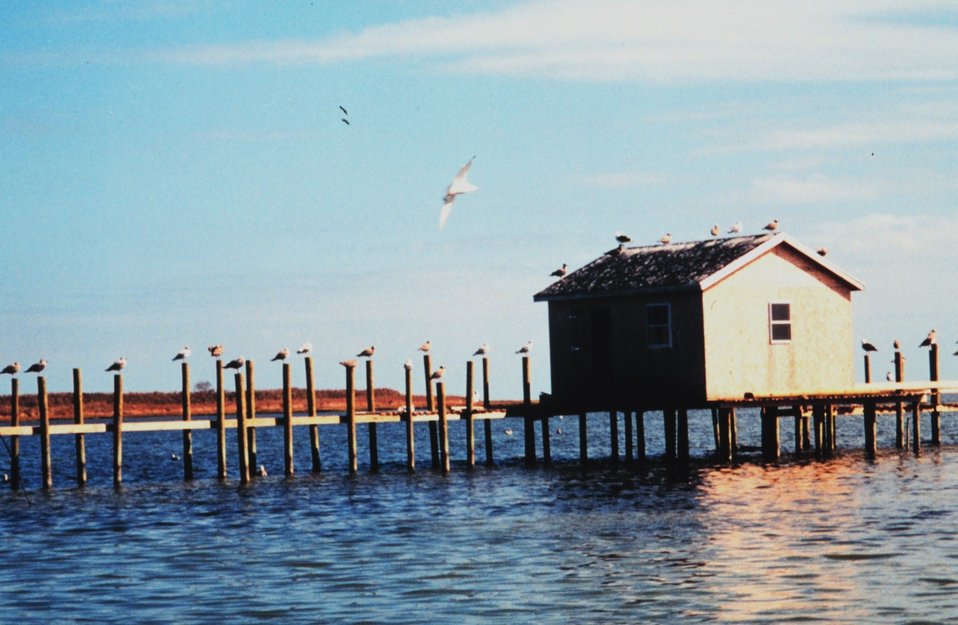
Seagulls occupying almost every piling along a Tangier Island waterman's dock.